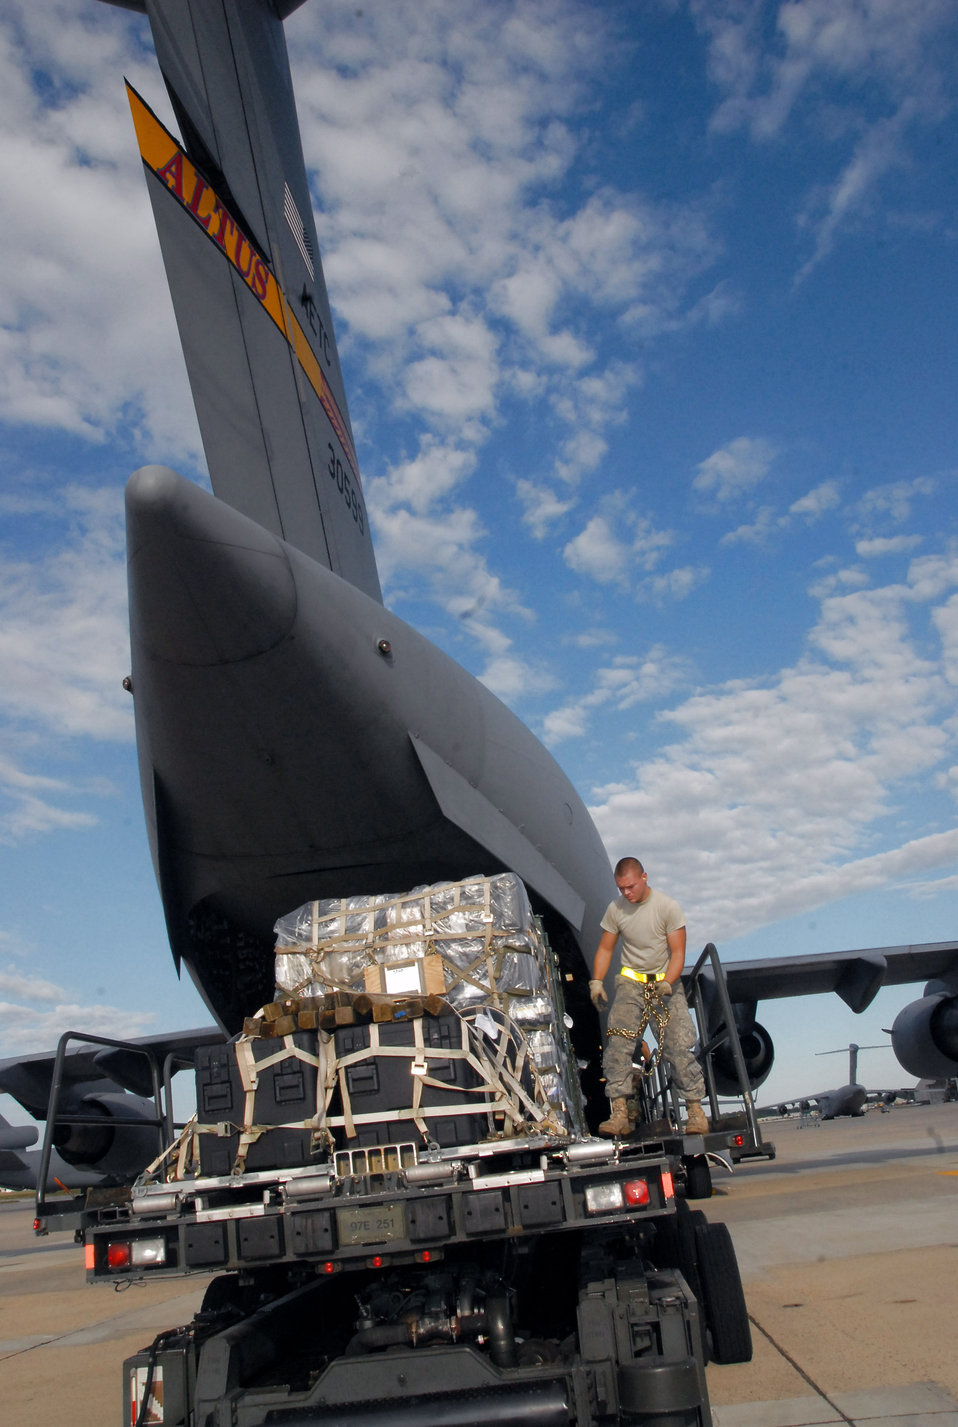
Altus crews help prepare for Hurricane Ike

Airman 1st Class Gregory S. Reno assists in loading a C-17 Globemaster III Sept. 10 at Kelly Field, Texas. The cargo will be used for emergency response and contingencies related to Hurricane Ike. The supplies were flown to Harlingen, Texas, by a crew assigned to the 58th Airlift Squadron from Altus Air Force Base, Okla. Airman Reno is from the 305th Aerial Port Squadron, McGuire AFB, N.J.